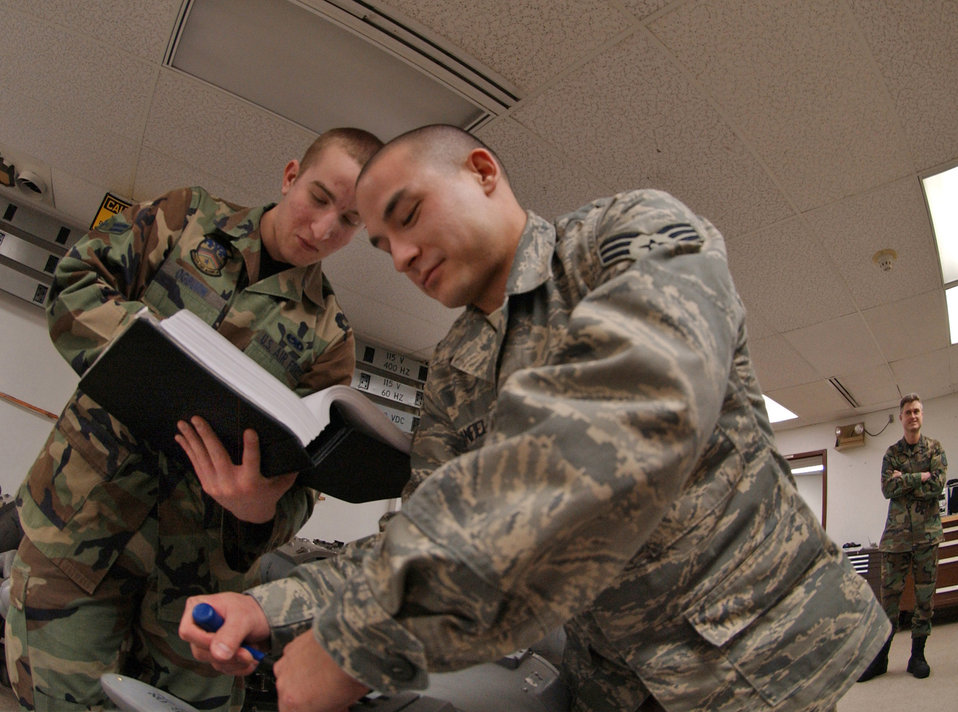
Electronic attack pod increases lethality

Senior Airman Frank Canfield assists Airman 1st Class Timothy Ogburn in replacing safety wire on an electronic attack pod Feb. 27 in the Avionics Flight at Eielson Air Force Base, Alaska. The pods, maintained by the flight against Alaska's harsh arctic winters, provide an offensive electronic attack that degrades an enemy aircraft's radar. Airman Canfield is an avionics sensors journeyman and Airman Ogburn is an electronic warfare journeyman. Both are assigned to the 354th Maintenance Squadron here.